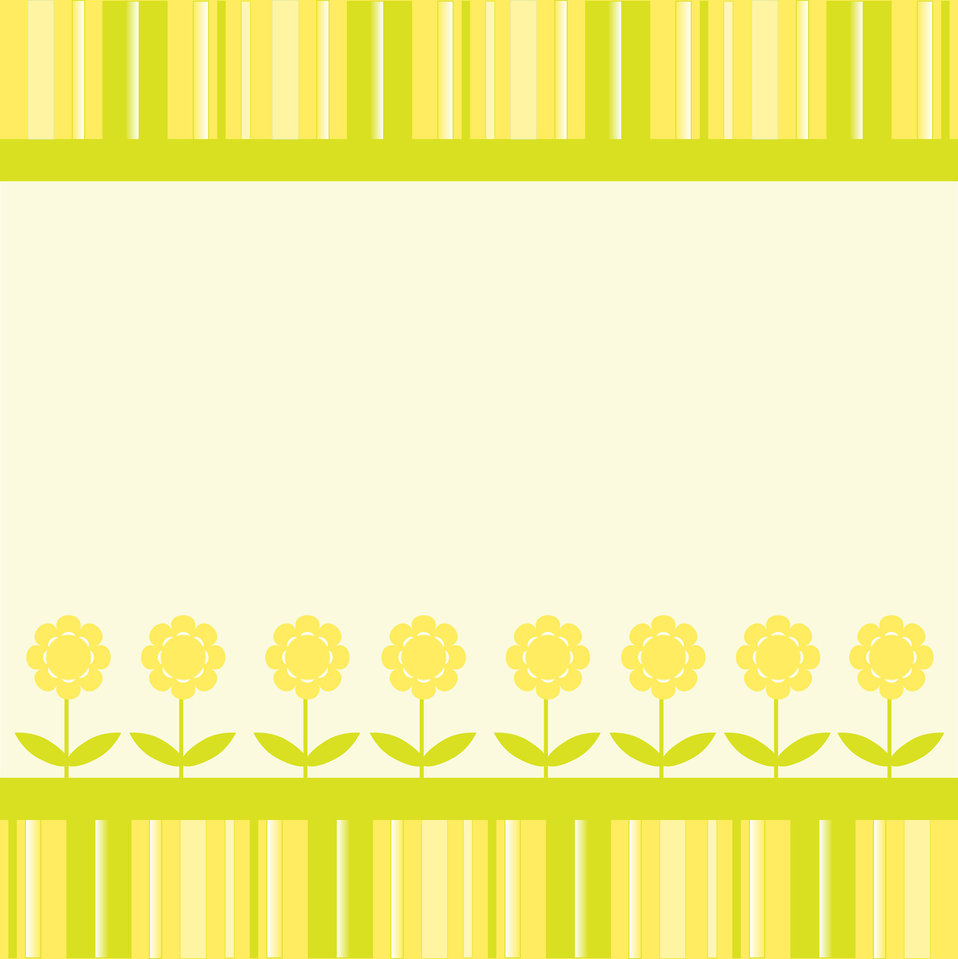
Floral stripes card

Yellow and green floral stripes background card for scrapbooking.